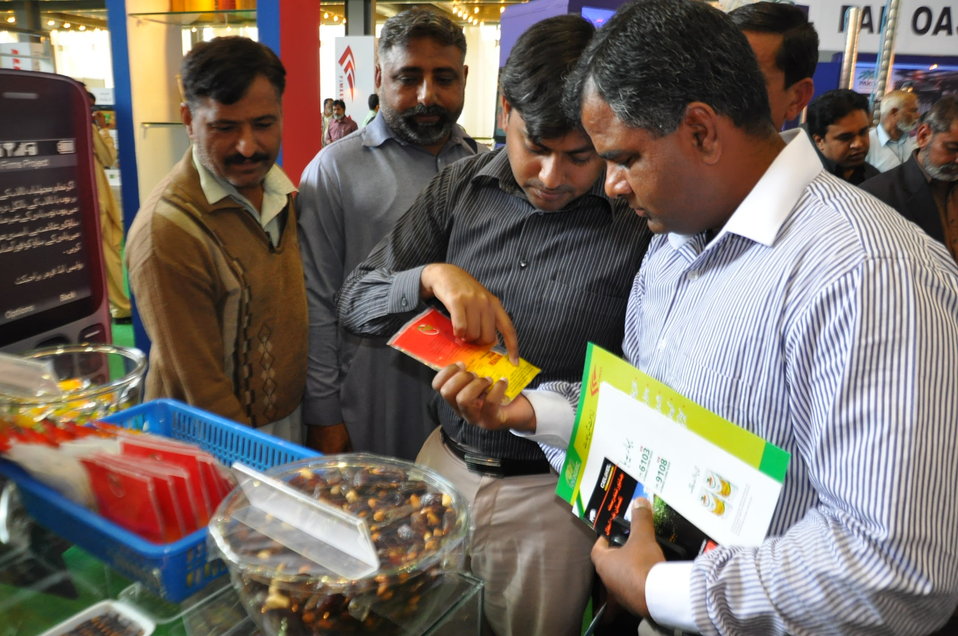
USAID Firms Project at the Dawn Agri Expo 2014

Visitors taking interest in the display dried Mango export samples showcased at the USAID Firms Project Stall at the Dawn Agri Expo